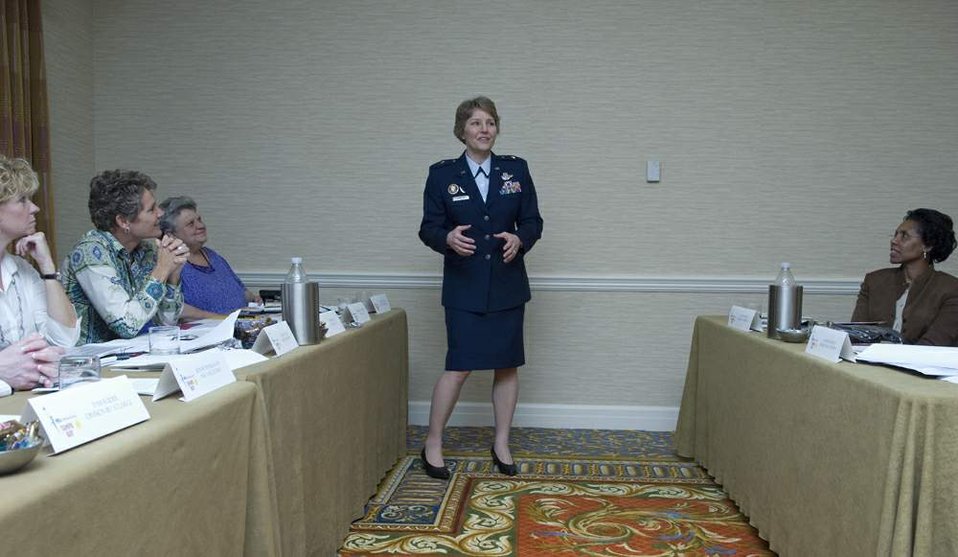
General participates in NCAA Women's Final Four

Brig. Gen. Michele D. Johnson answers questions from members of the NCAA Women's Basketball Coaches Association Board of Directors meeting about her career and the importance of preparing young woman athletes
for careers in and out of sports April 4 in Tampa, Fla. General Johnson is the most decorated female athlete in U.S. Air Force Academy history. She was selected by the NCAA to speak to women athletes and participate at numerous NCAA events before the 2008 NCAA Women's Final Four basketball tournament. General Johnson is the deputy director on the war on terrorism, Strategic Plans and Policy Directorate on the Joint Staff at the Pentagon.